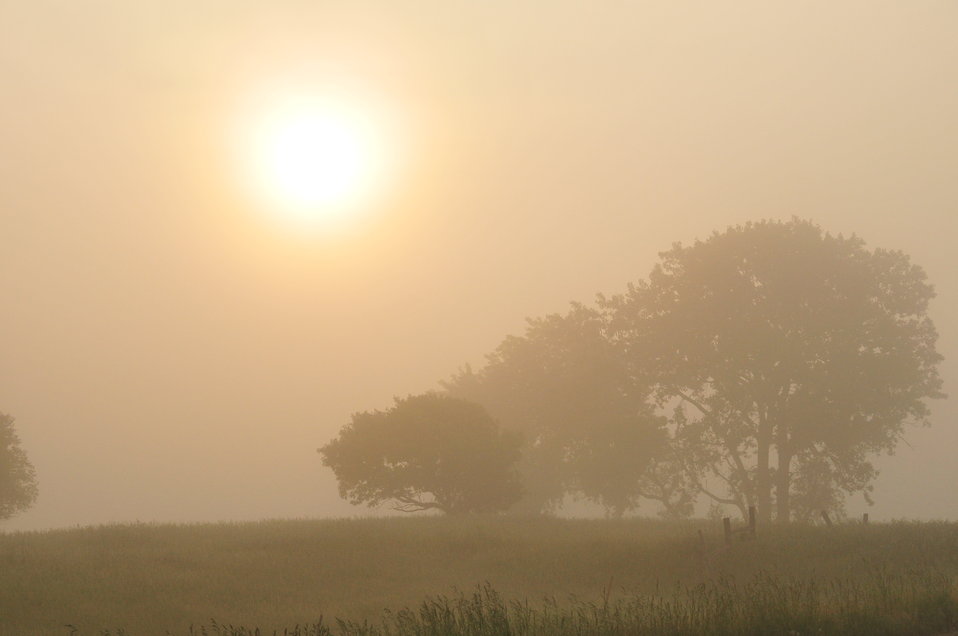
Foggy Sunrise Sand Lake NWR